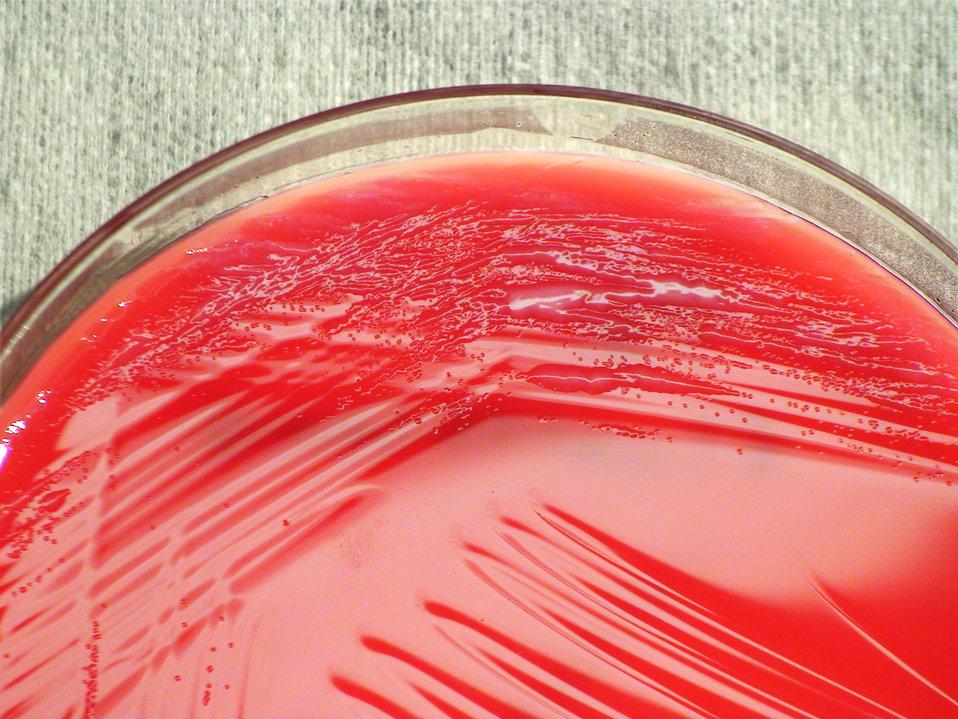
A closer view of PHIL 12457, this photograph depicts the colonial morphology displayed by Gram-negative Pseudomonas fluorescens bacteria, which was grown on a medium of sheep's blood agar (SBA), for a 24 hour time period, at a temperature of 37�C.